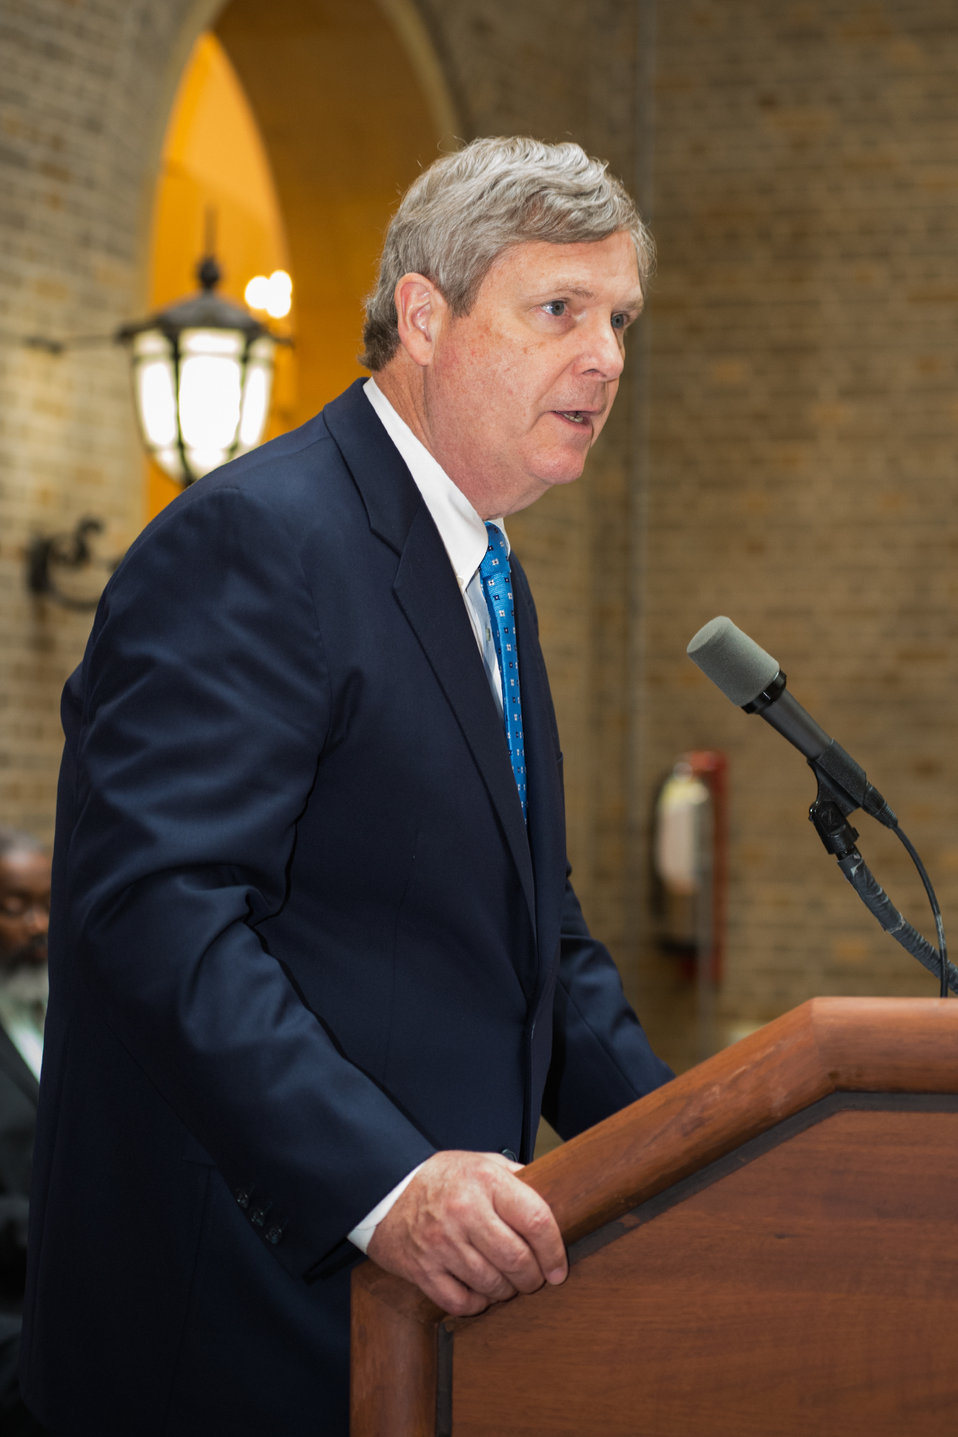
Agriculture Secretary Tom Vilsack offers his congratulations and appreciation to employees at the U.S. Department of Agriculture’s (USDA) Unsung Hero Awards at USDA in Washington, D.C. on Wednesday, May 7, 2014. USDA’s Organization of Professional Employees (OPEDA) in cooperation with USDA’s Departmental Management (DM) presented awards to employees who have demonstrated extraordinary effort in performing tasks, who have unselfishly shared time and expertise, and consistently and willingly extended a helping hand. They were also recognized for their contributions to transforming the culture of USDA.